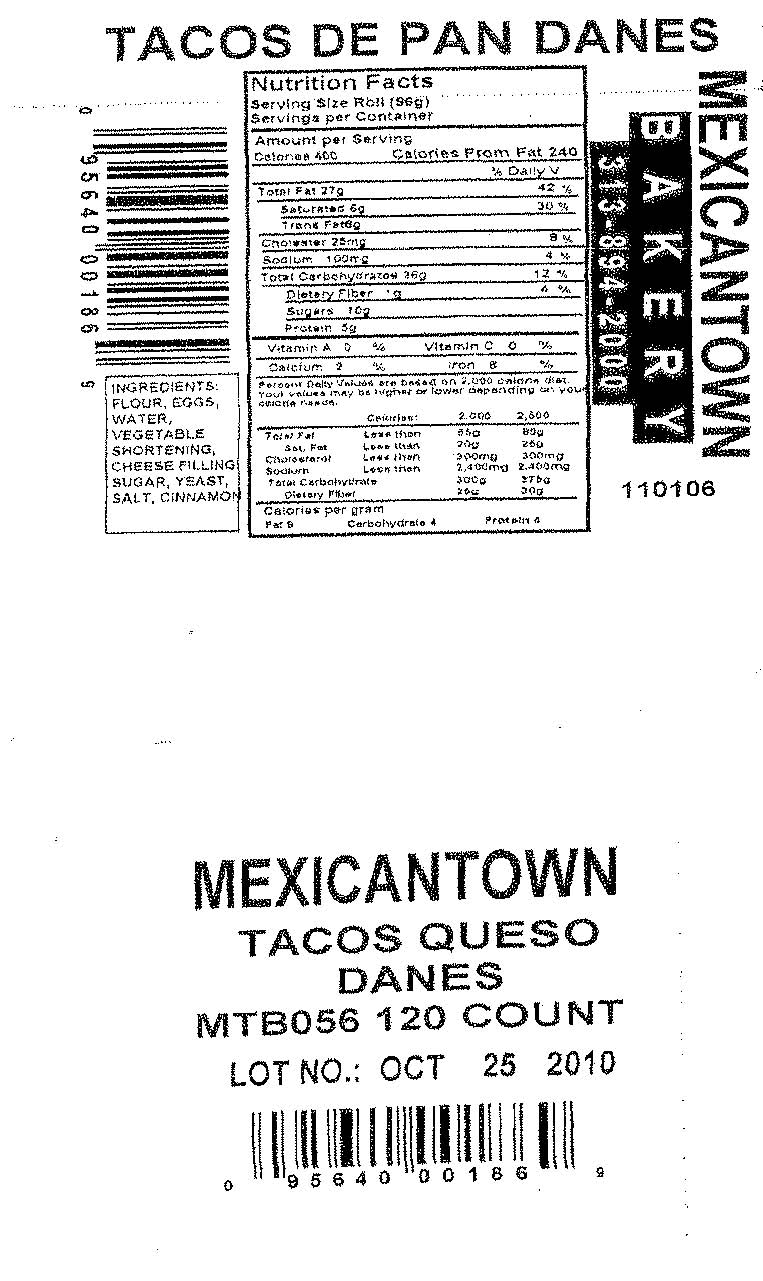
RECALLED - Mexicantown Tacos De Pan Danes

April 7, 2011 - Product Recall - Mexicantown Whole Issues Allergy Alert On Undeclared Pecans In Pan Nuez And Undeclared Milk In Magdalena, Pan De Maiz, YoyoPan Nuez, And Tacos De Pan Danes.